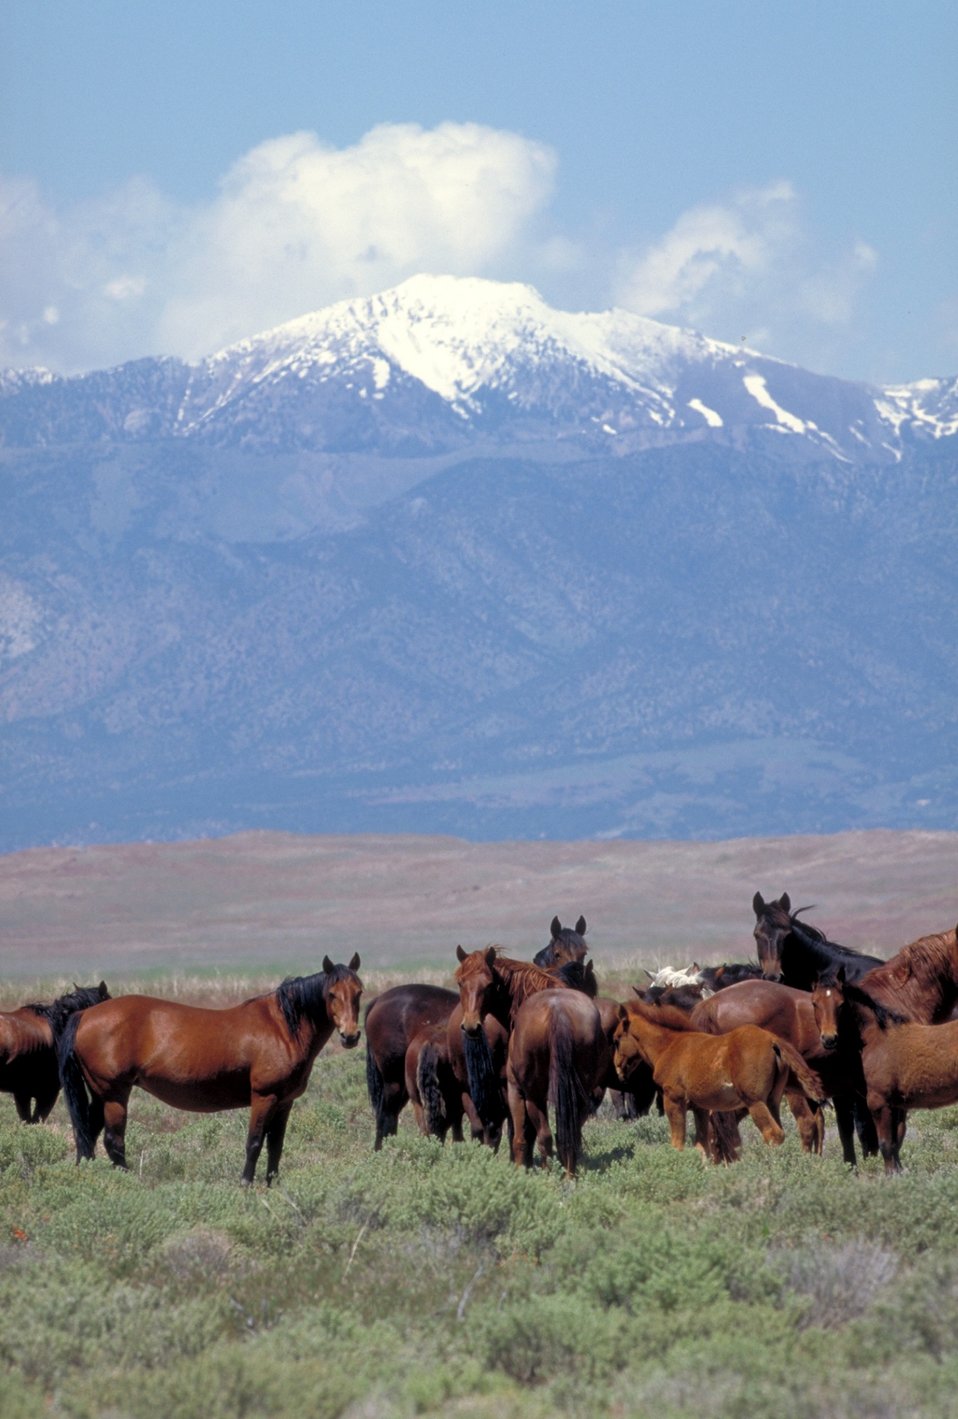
Onaqui Herd near Dugway, Utah.